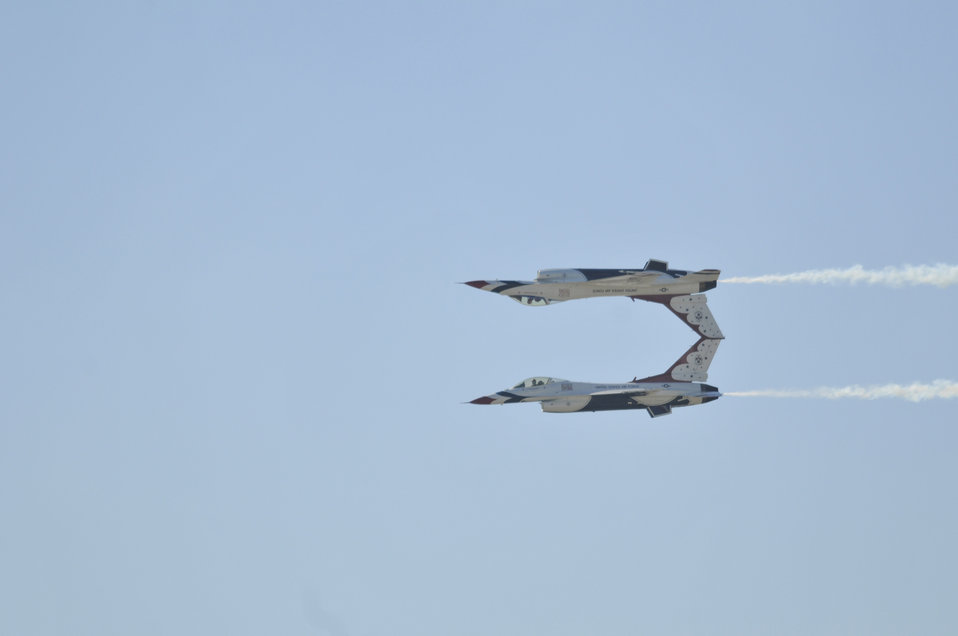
AirFest 2010

The U.S. Air Force air demonstration team, the Thunderbirds, perform precision aerial maneuvers Nov. 6, 2010, during AirFest 2010 at Lackland Air Force Base, Texas.